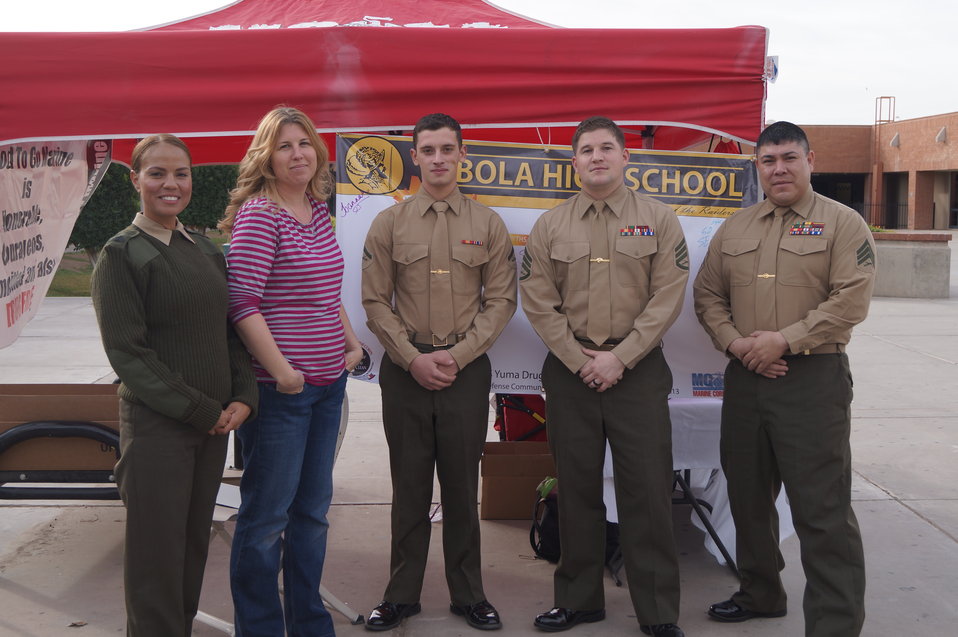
Nationa Drug Facts Week - CIBOLA HS

The Drug Demand Reduction Program out of Yuma, Arizona held numerous events at local schools to support NIDA's National Drug Facts Week, Jan. 27-Feb. 2 2014. Teens participated in drug awareness games, and helped to Shatter the Myths about teen substance abuse.